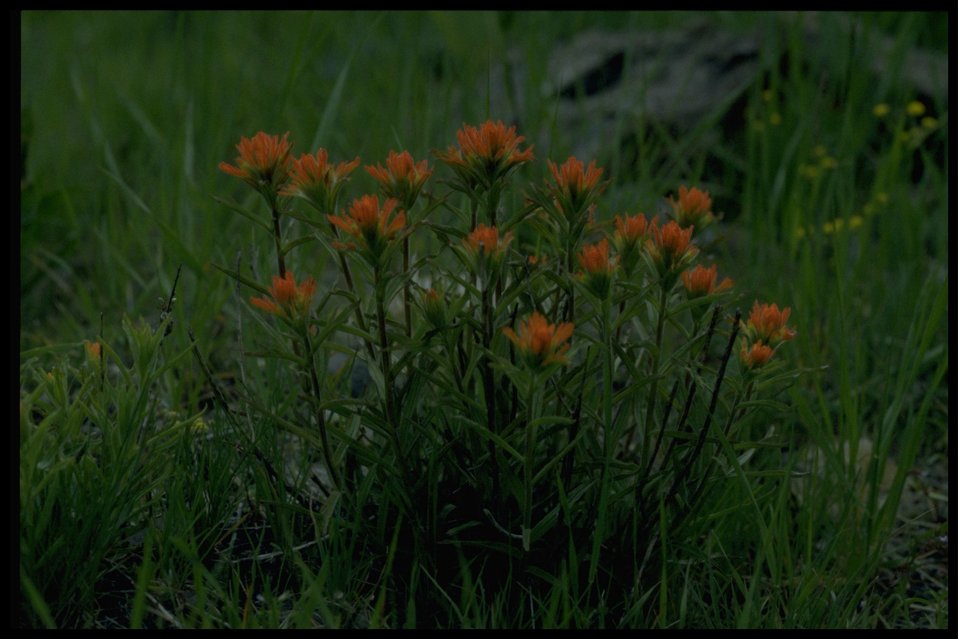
Farshot of wavyleaf Indian paintbrush (Castilleja applegatei).